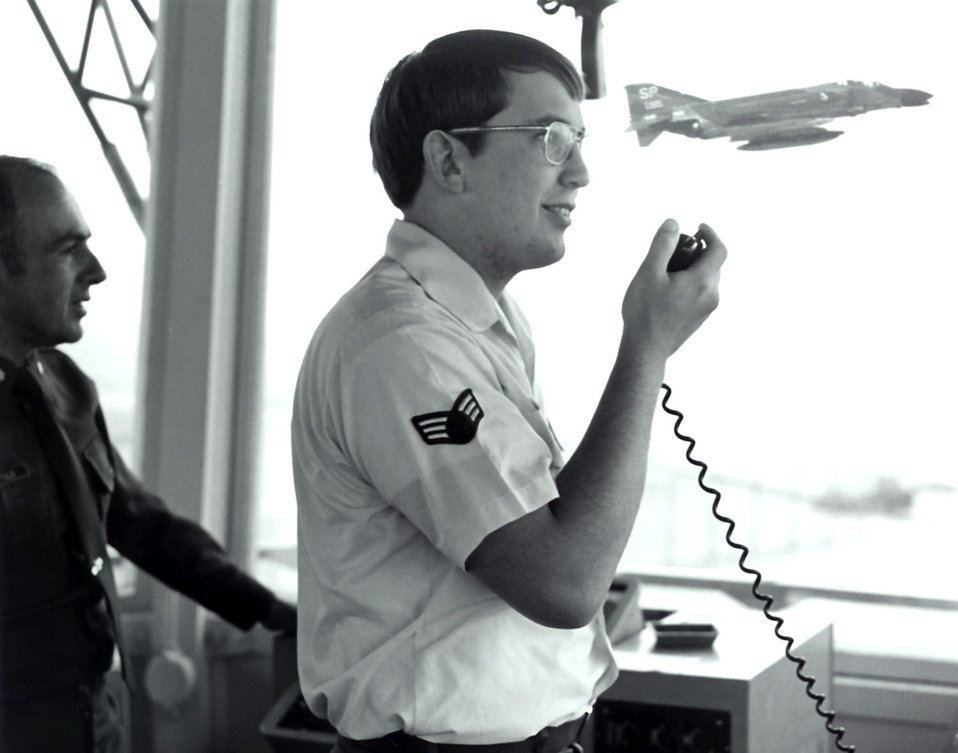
1978 Control Tower Operations

Senior Airman Bob Wisniewski directs air traffic control operations at Aviano Air Base, Italy in 1978 as Lt. Col. Gene DiBartolo, the 40th Tactical Control Group's deputy commander watches. An F-4 Phantom is seen in the control tower window.